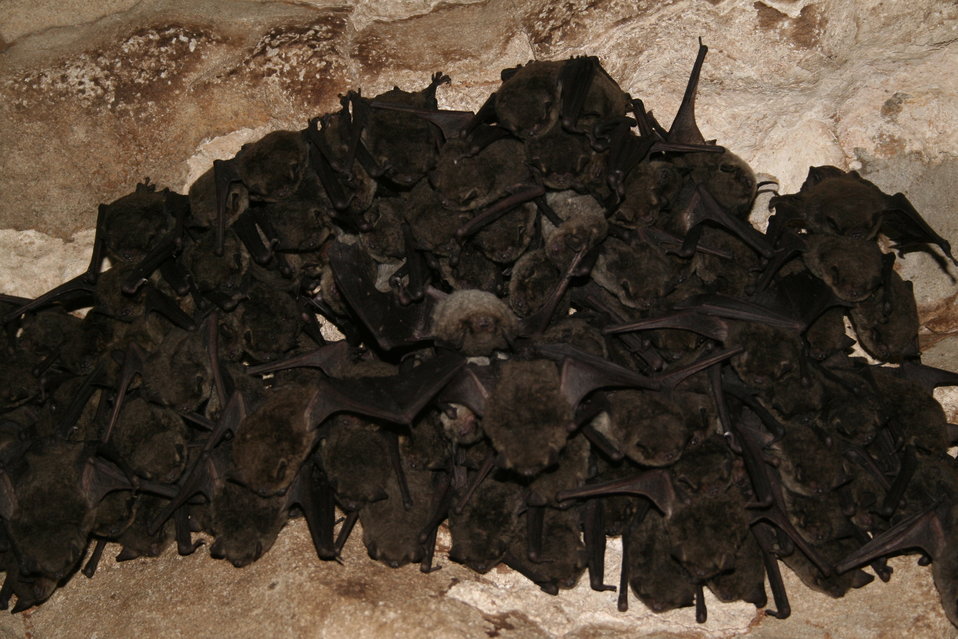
Cluster of gray bats

Cluster of hibernating gray bats (Myotis grisescens)